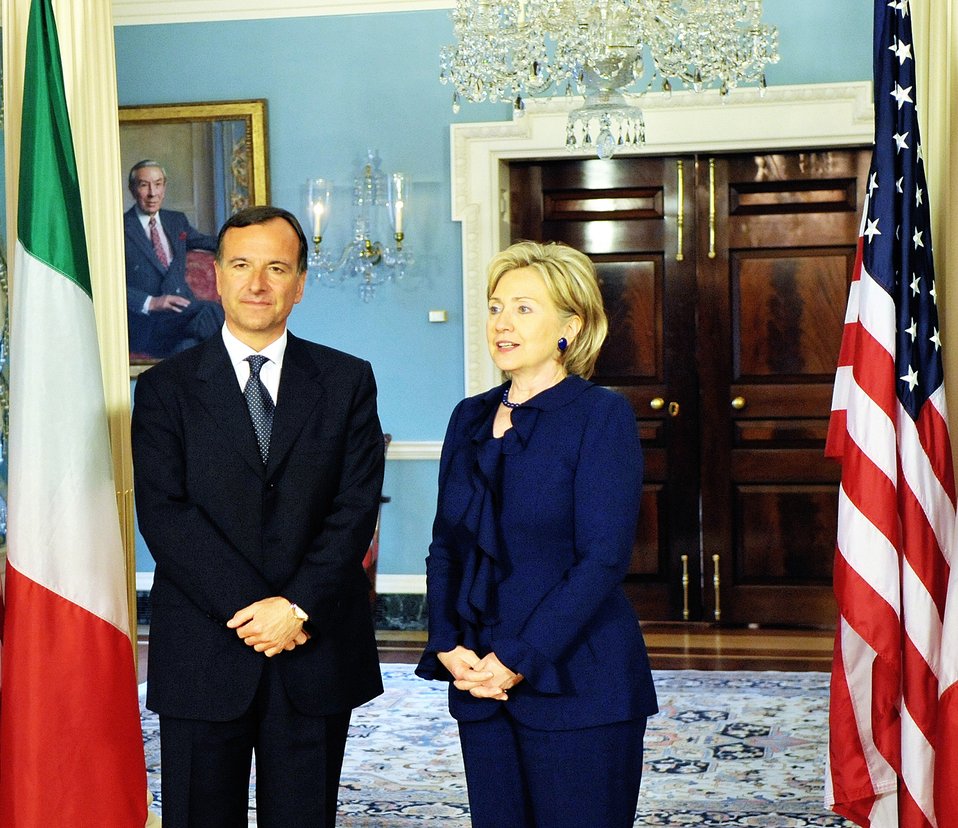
Secretary Clinton Meets With Italian Foreign Minister

U.S. Secretary of State Hillary Rodham Clinton hosts a bilateral meeting with Italian Foreign Minister Franco Frattini in the Treaty Room of the U.S. Department of State in Washington, DC May 7, 2009.